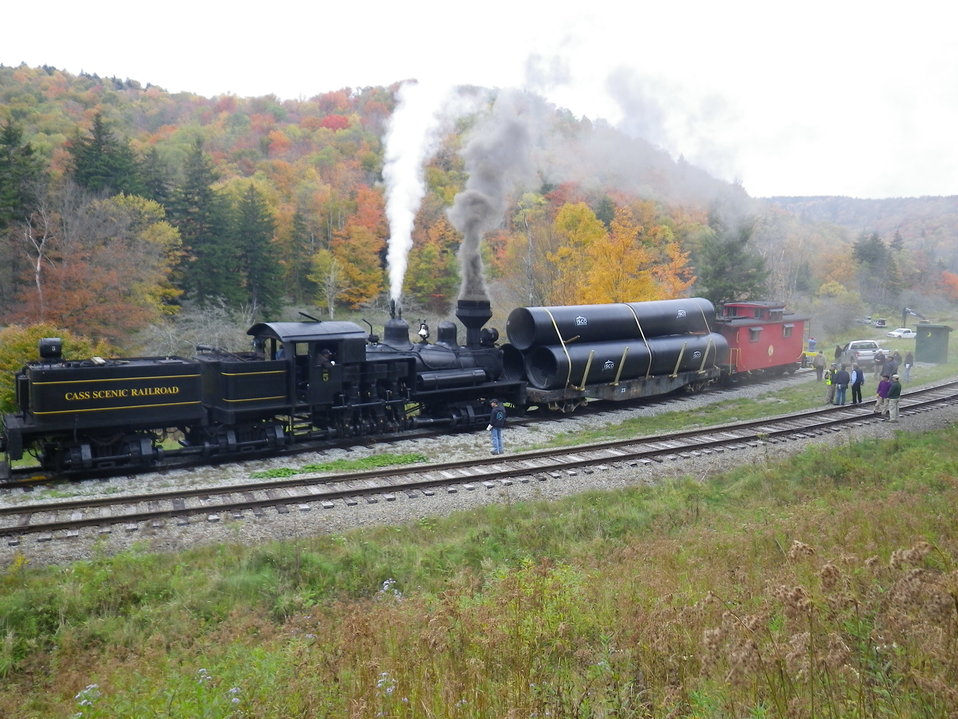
Vintage train helps improve fish passage

Pocahontas County, West Virginia, October 1, 2012.: An original Shay engine #5 transport culverts to a fish passage project in a roadless area on Oats Run in Spruce, WV. Oats Run is a headwater tributary of Shavers Fork that has native Eastern brook trout. The culverts are part of a large-scale restoration project to improve fish passage. Cass Scenic Railroad is a partner in the project funded by the Eastern Brook Trout Joint Venture. The engine was once used to haul timber from Spruce, once a bustling town, but now abandoned. Cass Scenic Railroad will haul all materials and heavy equipment via the rail line.